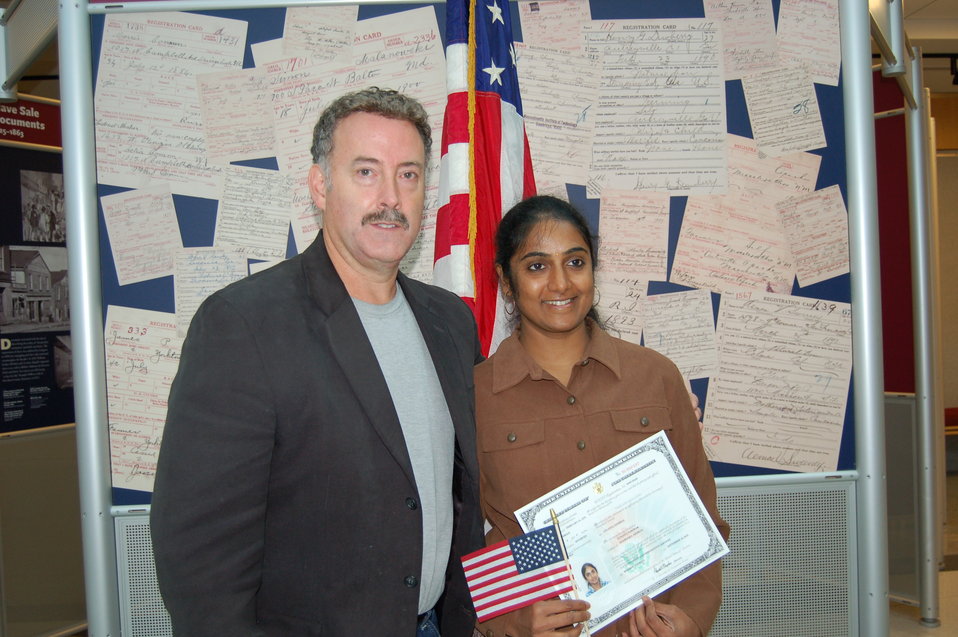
New Citizens